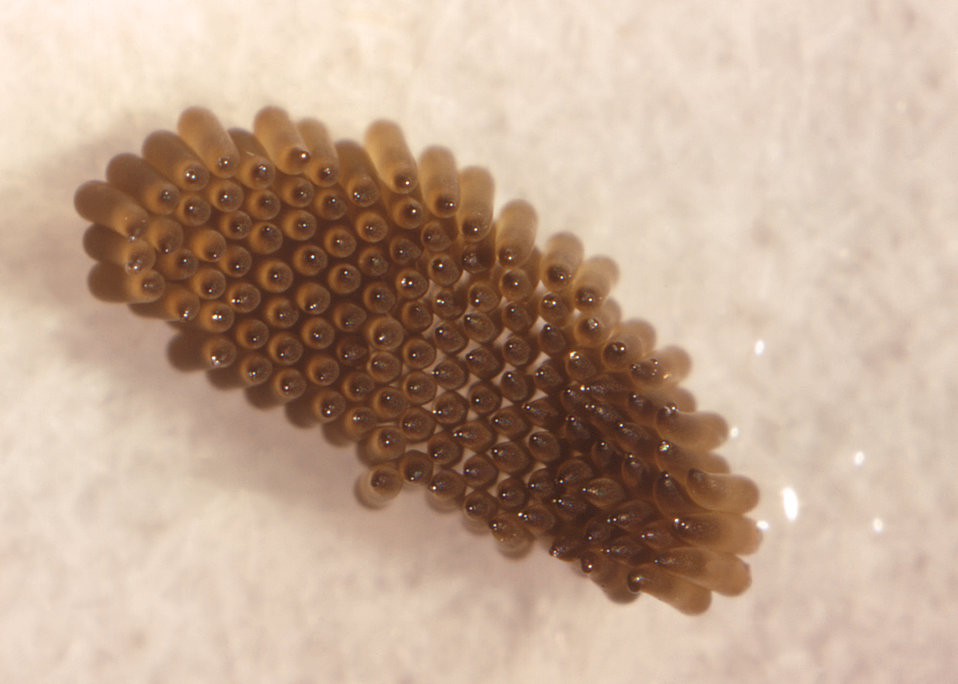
This image depicts the 'egg raft' deposited by a female Culex quinquefasciatus mosquito. The female C. quinquefasciatus mosquito is known as one of the many arthropodal vectors responsible for spreading the West Nile virus to human beings through their bite when obtaining a blood meal.